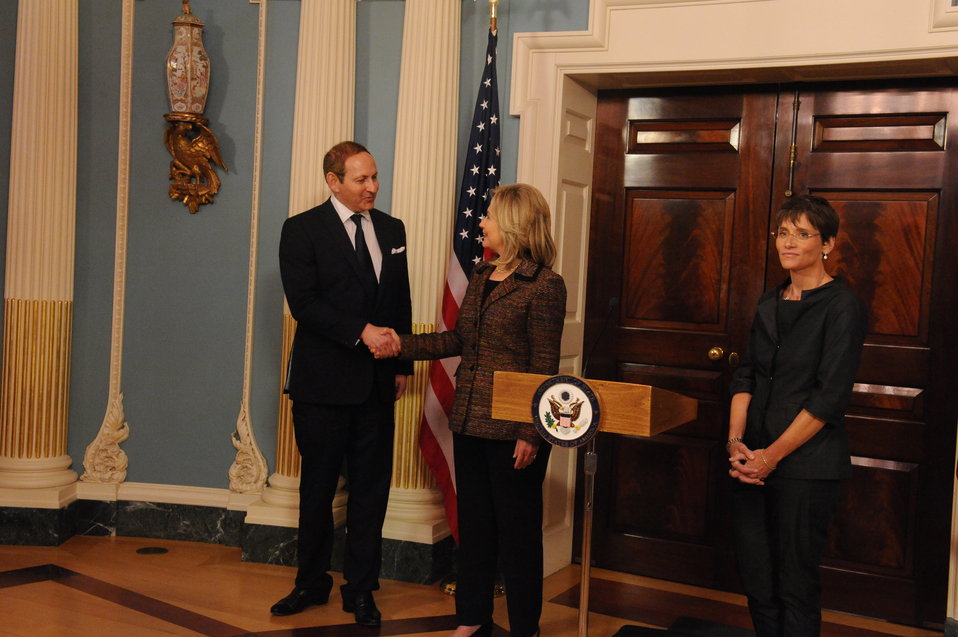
Secretary Clinton Shakes Hands With Partners of the M∙A∙C AIDS Fund

U.S. Secretary of State Hillary Rodham Clinton poses for a photo with partners of the M∙A∙C AIDS Fund, a public-private partnership to expand critical medical and emergency support services for survivors of rape and sexual assault in South Africa, at the U.S. Department of State in Washington, D.C., on June 2, 2011.